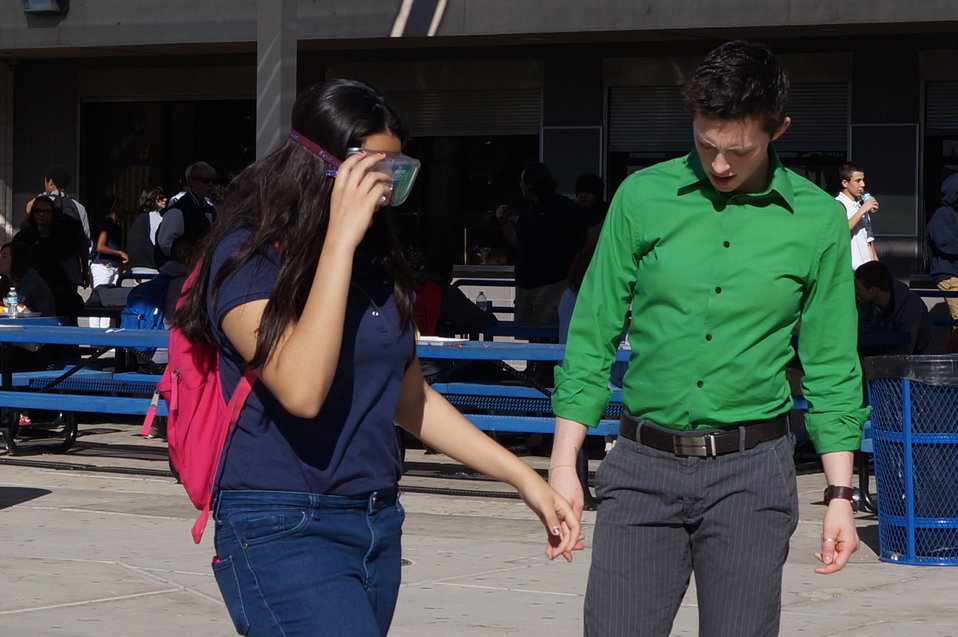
National Drug Facts Week - YUMA HIGH

The Drug Demand Reduction Program out of Yuma Arizona held numerous events at local schools to support NIDA's National Drug Facts Week, Jan. 27-Feb. 2 2014. Teens participated in drug awareness games, and helped to Shatter the Myths about teen substance abuse.